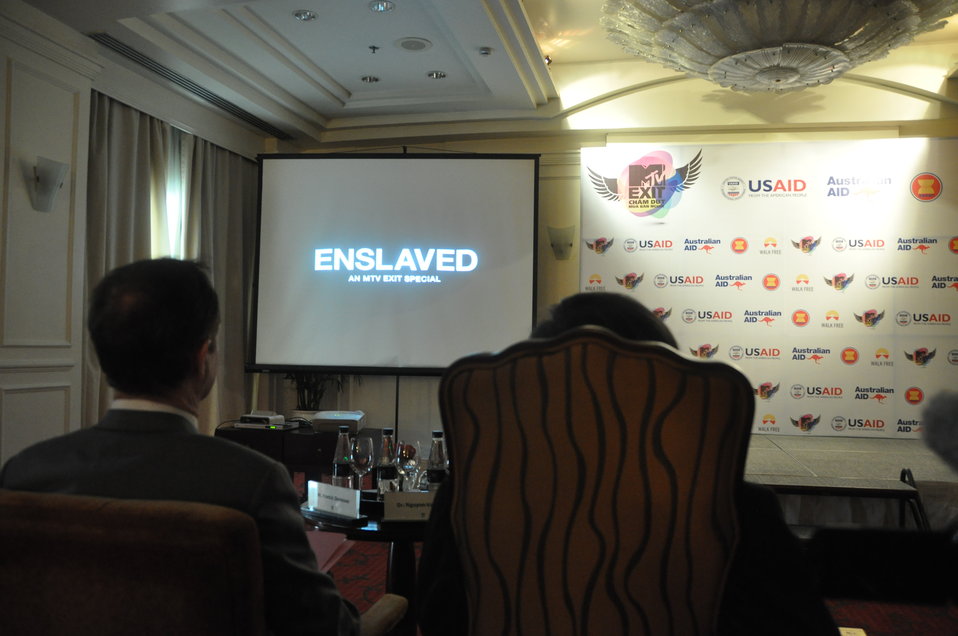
USAID joins MTVExit to launch documentary and awareness campaign against human trafficking